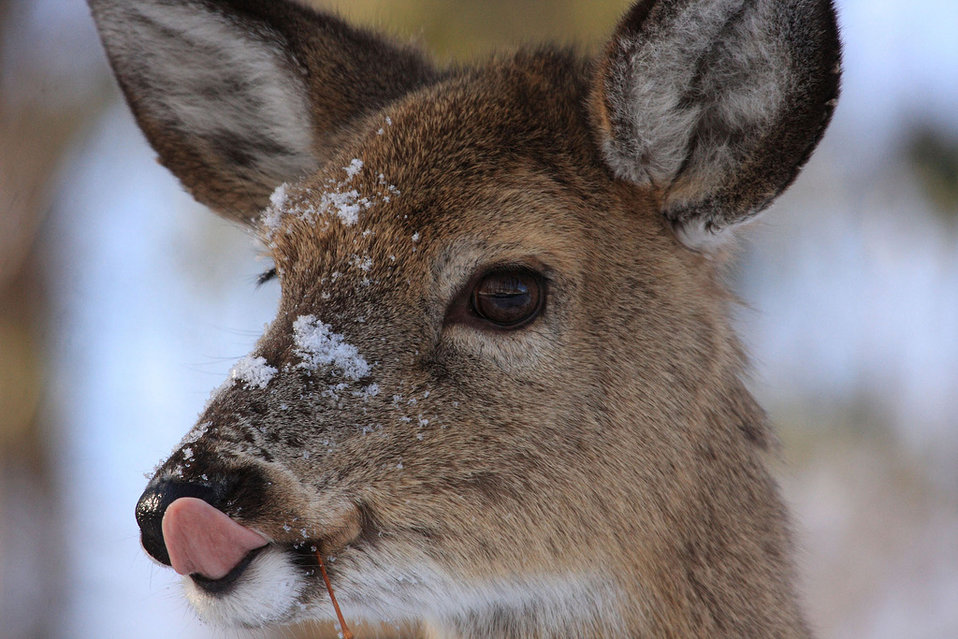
Taste of snow

A deer licks the snow on its nose at John Heinz National Wildlife Refuge at Tinicum, PA.